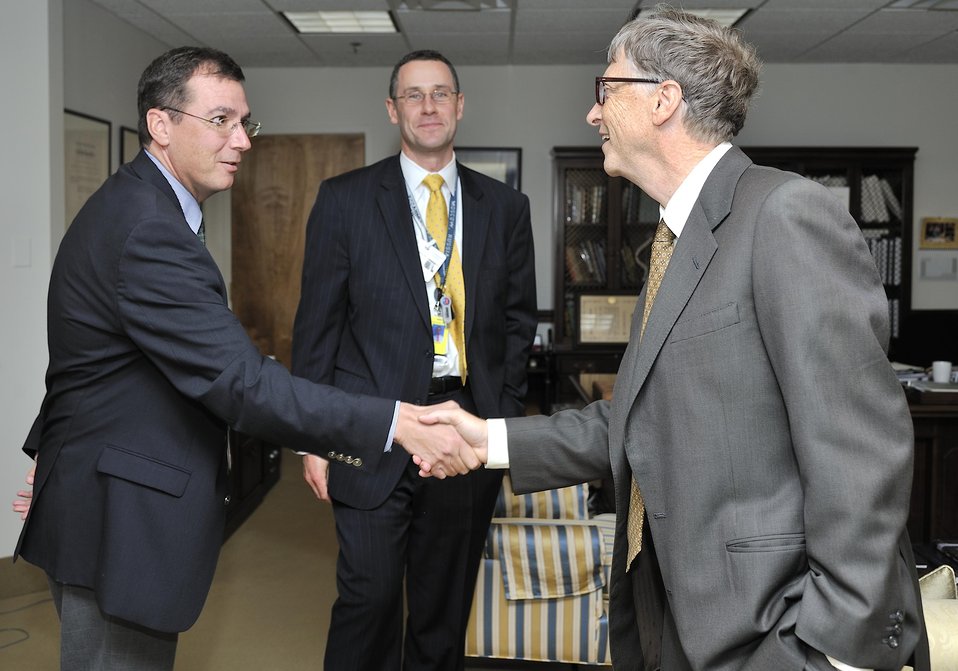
Ken Shipp/DOE Photo